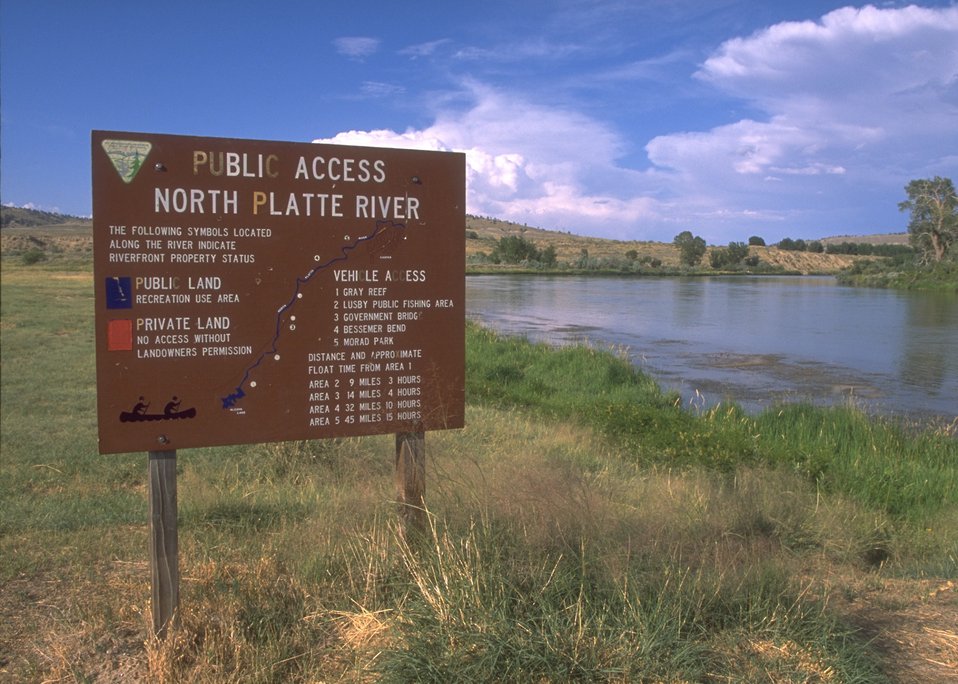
Bessemer Bend crossing on the Oregon Trail, North Platte River, Casper Field Office.